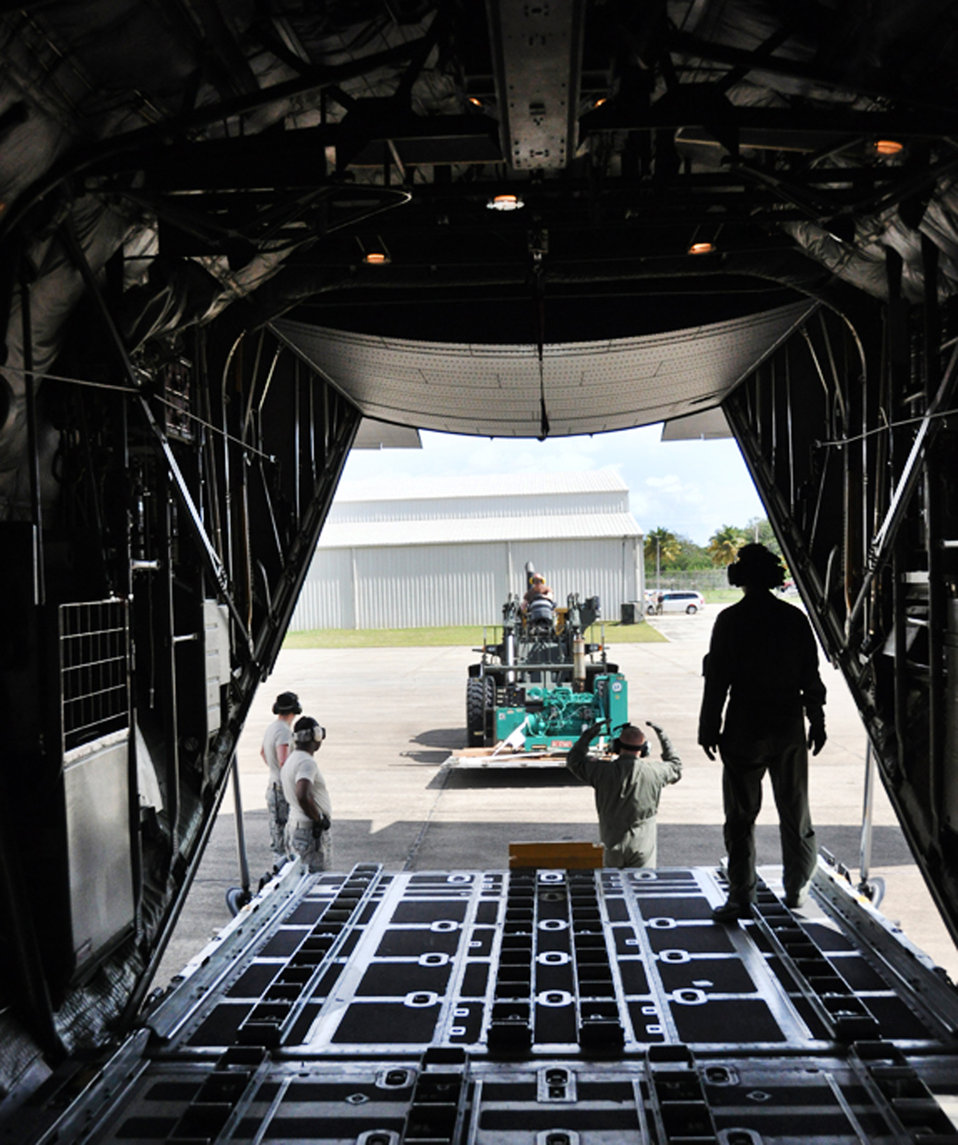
Vigilant Guard Exercise

Airmen from the 817th Contingency Response Group guide a generator onto a C-130 Hercules from the North Carolina Air National Guard during the Vigilant Guard exercise held in Puerto Rico March 23 to 29. During the disaster relief exercise, Airmen from the 621st Contingency Response Wing from McGuire Air Force Base, N.J., conducted a hub-and-spoke operation that provided passenger and cargo movement to four locations around the island. The 817th CRG is part of the 621st CRW.